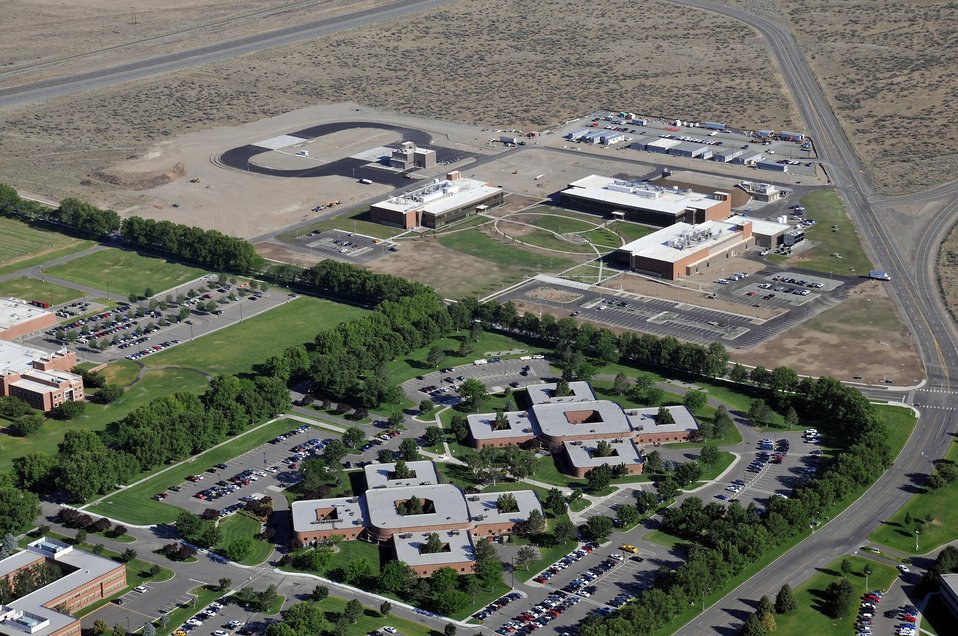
PHYSICAL SCIENCES FACILITY FROM THE SOUTHEAST, ON THE PACIFIC NORTHWEST NATIONAL LABORATORY MAIN CAMPUS.

DOE's Pacific Northwest Laboratory is located near Richland, Washington. PNNL supports a Broad range of DOE's programs and performs research and development to meet key national needs such as selected environmental, energy, health, and national security objectives as well as strengthening the economy and supporting the education of future scientists and engineers.